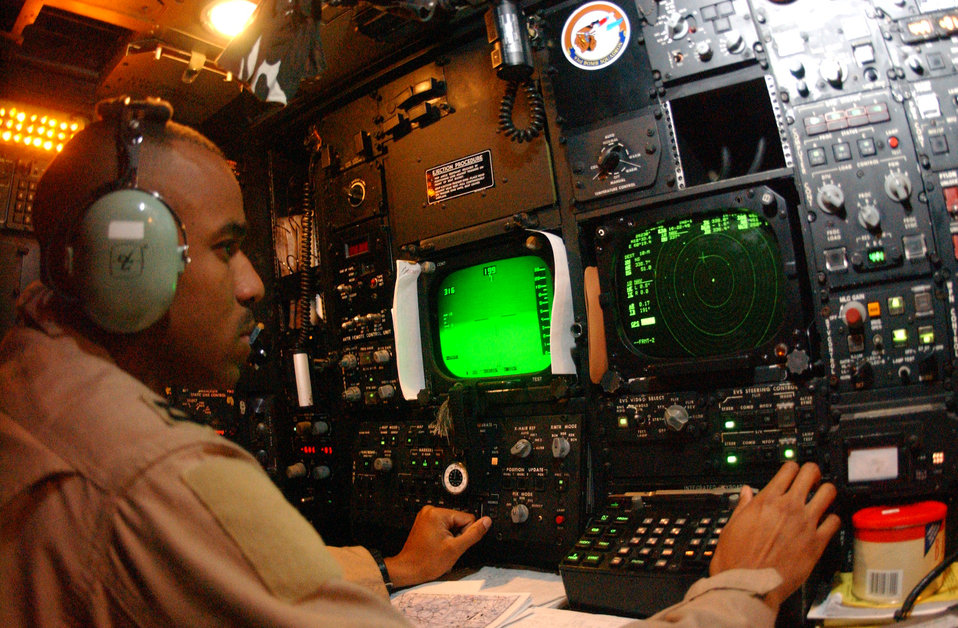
Tuning in

OPERATION IRAQI FREEDOM -- 40th Expeditionary Bomb Squadron, radar navigator adjusts the Electronic Optical Viewing system during a B-52 bombing mission over Iraq on April 7. Operation Iraqi Freedom is the multi-national coalition effort to liberate the Iraqi people, eliminate Iraqi's weapons of mass destruction and end the regime of Saddam Hussein.